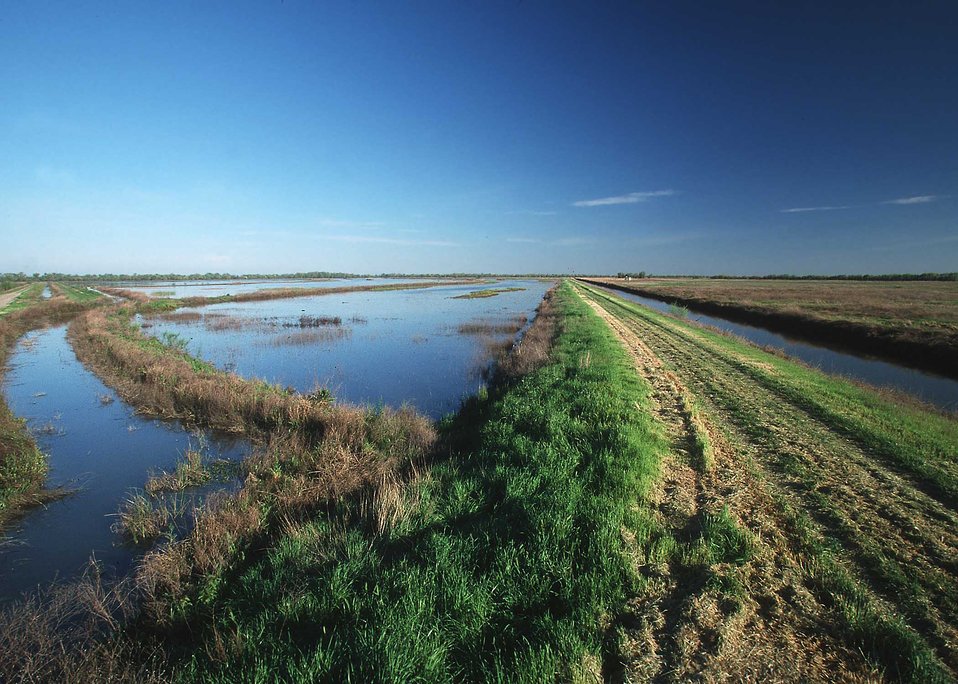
Restored wetland in northern California. Landowners used the Natural Resources Conservation Service's Wetlands Reserve Program to restore this wetland area.